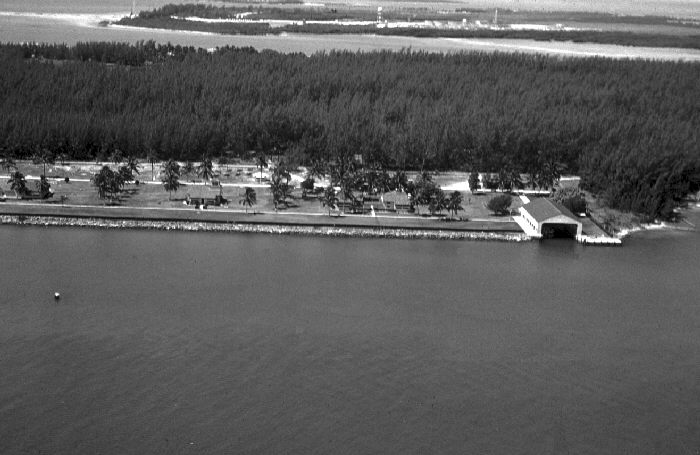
PHS Quarantine Station, Miami, Florida